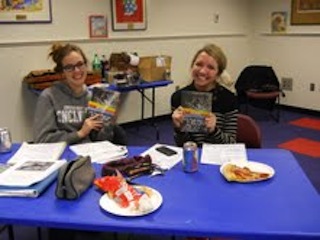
Shatter the Myths, NDFW 2013

Perrysburg, Oh. NDFW 2013 Chat Day event with Prevention Partners Program.